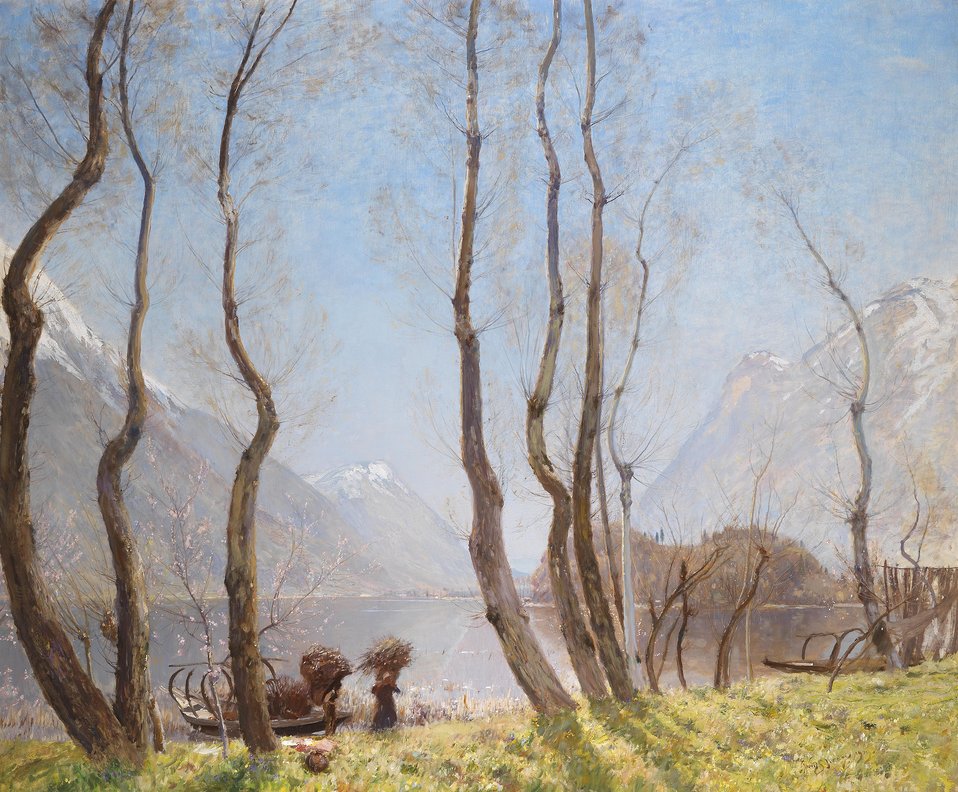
Deutsch: Frühling am Lago di Piano, signiert u. datiert David Murray 1909, rückseitig eigenhändig betitelt und bezeichnet No.3, Lago di Piano, Val Menaggio, by David Murray Langham Chambers, Portland Place, London; Öl auf Leinwand auf Holz, 140 x 170 cm